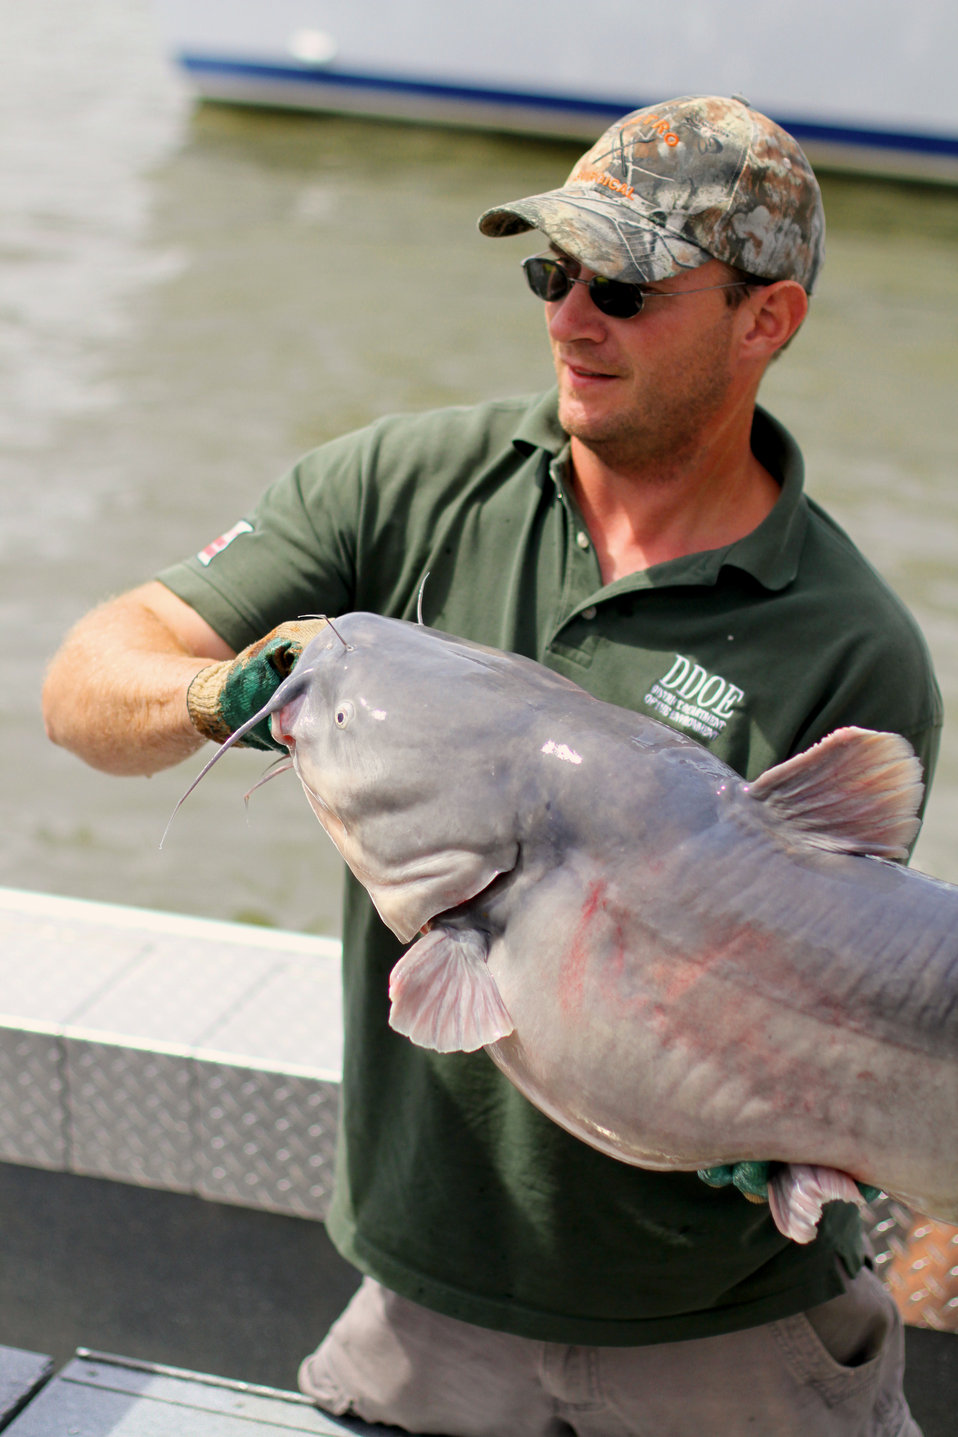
A Blue Catfish